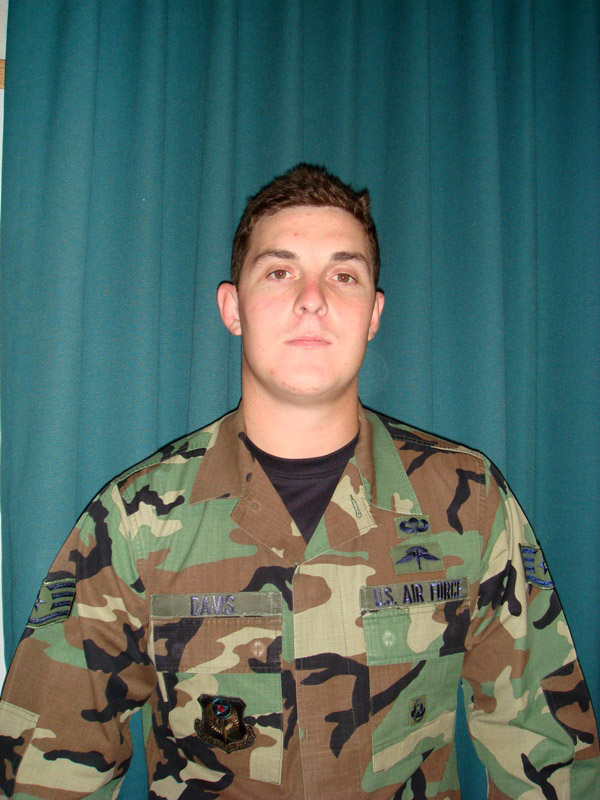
Special Operations Command Airman dies in Afghanistan

Staff Sgt. Timothy P. Davis died of wounds suffered when his vehicle encountered an improvised explosice device Feb. 20 in Afghanistan. He was assigned to the 23rd Special Tactics Squadron at Hurlburt Field, Fla.